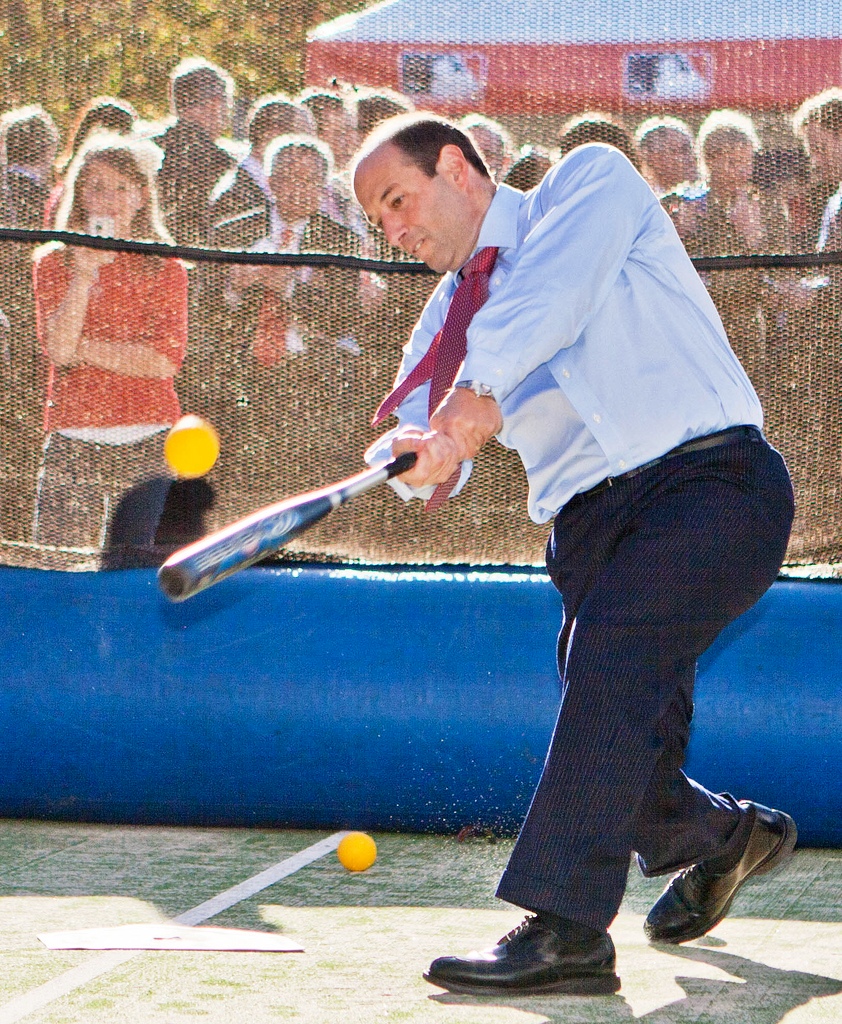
Ambassador Bleich Plays Baseball

U.S. Ambassador to Australia Jeffrey L. Bleich plays baseball with U.S. Embassy Canberra in Australia staff and their Australian and diplomatic guests at the 'California Dreamin’'-themed U.S. Independence Day Celebration in Canberra, Australia, on July 1, 2010.